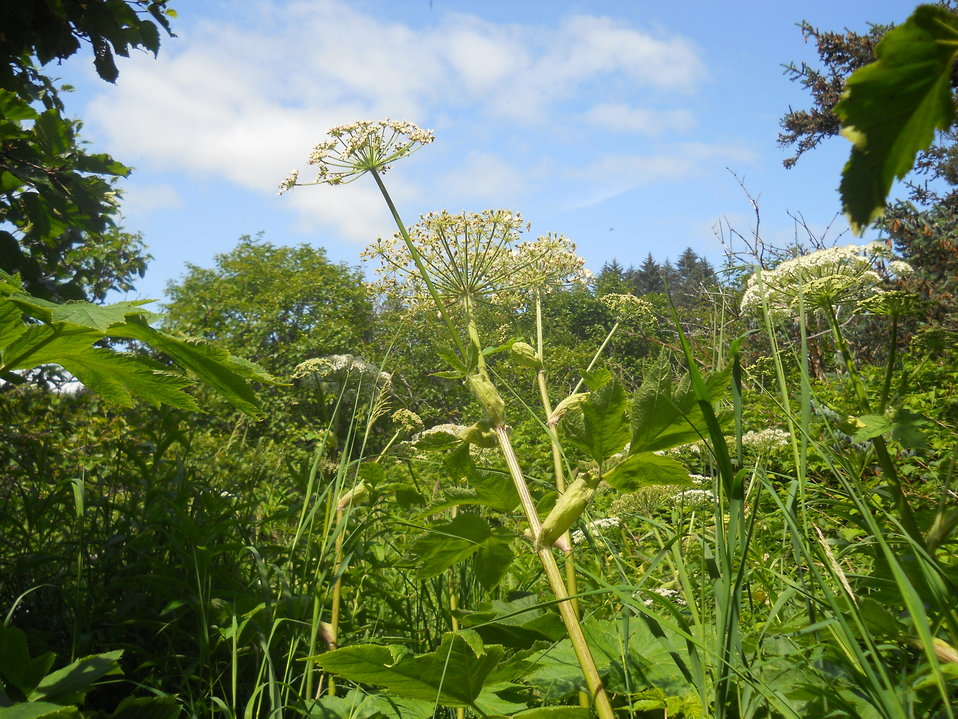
Pushki

Credit: USFWS
Photo taken by a Salmon Camp participant during a nature photography activity.

Source and Contact: Kodiak National Wildlife Refuge